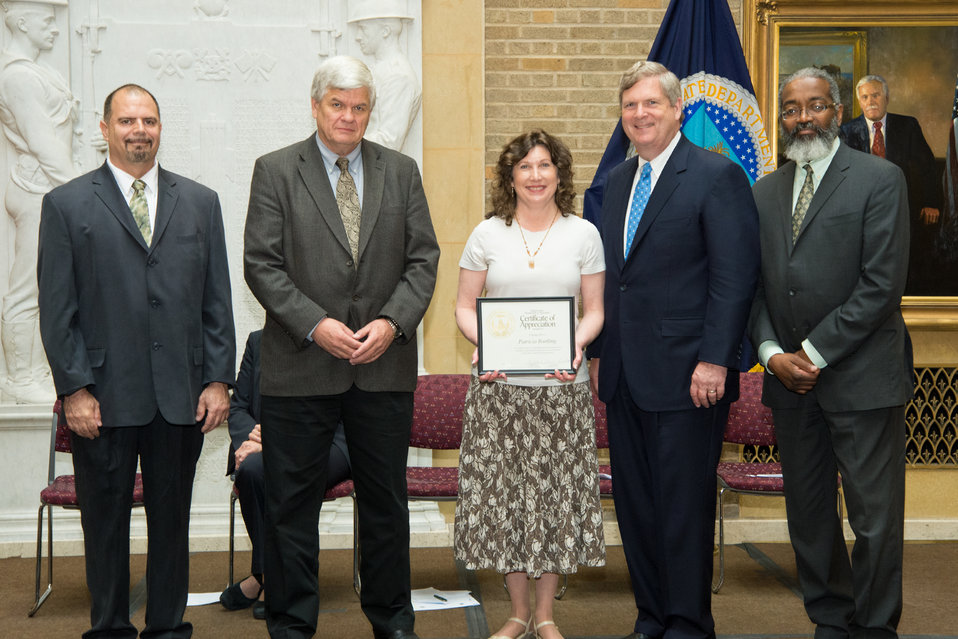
U.S. Department of Agriculture (USDA) Agricultural Research Service (ARS) Colorado Patricia Bartling receives the Unsung Hero Award from USDA’s Organization of Professional Employees President (OPEDA) Louis Iacoletti, USDA ARS Dr. Larry Chandler, Agriculture Secretary Tom Vilsack and USDA Assistant Secretary for Administration Dr. Gregory Parham at USDA in Washington, D.C. on Wednesday, May 7, 2014.